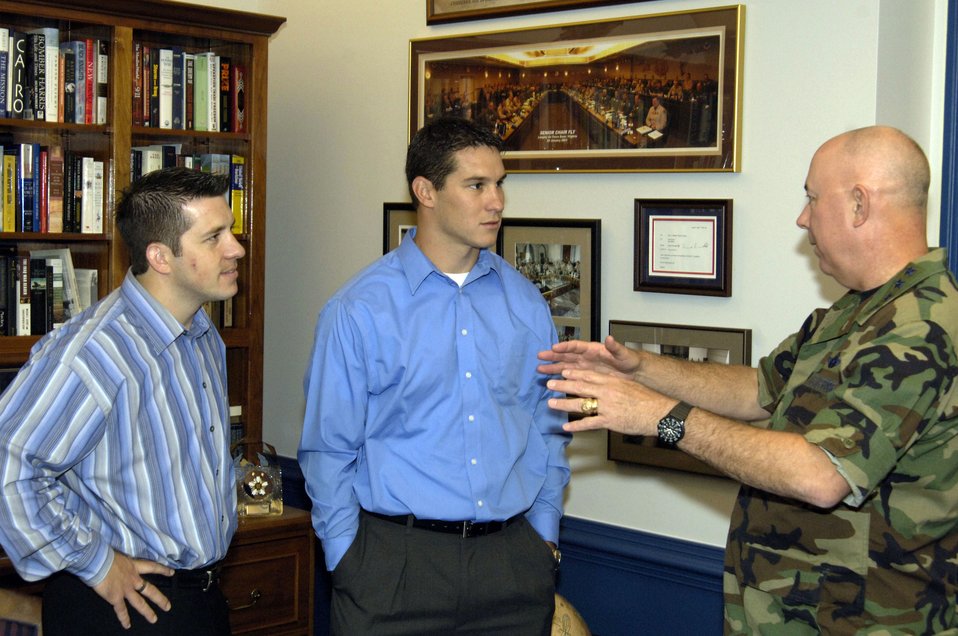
'Treasure Hunters' meet Air Force leaders

Air Force Chief of Staff Gen. T. Michael Moseley talks with Matt Zitzlsperger and Matt Rillos of Team Air Force from the